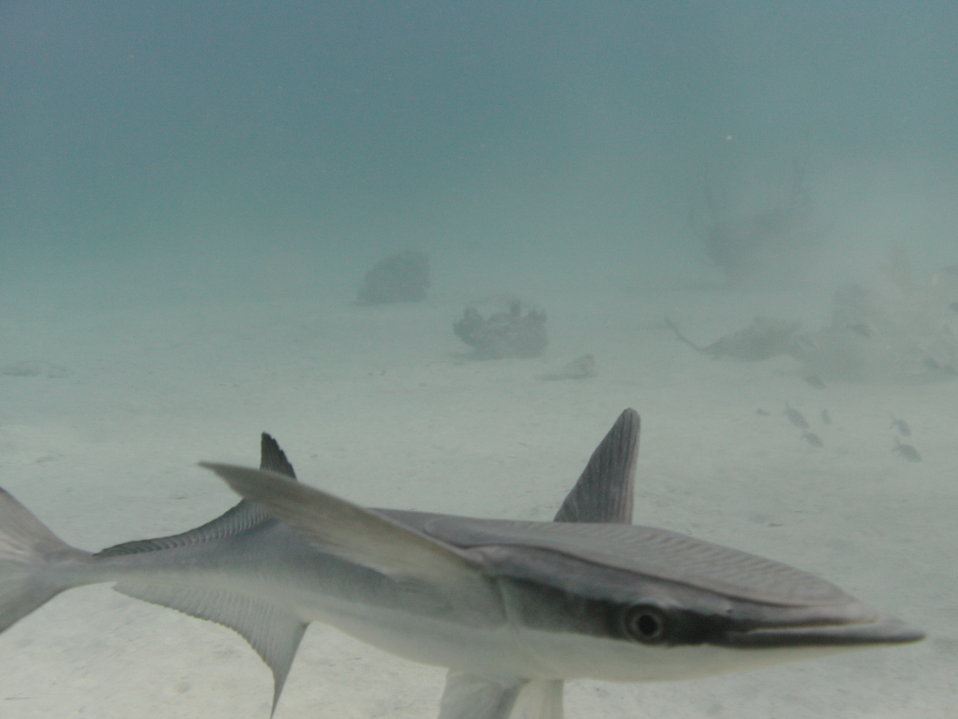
Curious Remora! Nassua, Bahamas

This Remora (Remora brachyptera) was photographed in about 30 feet of water at Barracuda Reef off of Nassua, Bahamas.

One member of EPA New England's dive team was in warmer than usual waters for 'proficiency dives.'

In order to maintain a safe dive program, EPA divers are encouraged to dive frequently, as the saying goes, 'practice makes perfect.'

When you are constantly diving in cold North Atlantic water, it is a treat and an opportunity to improve your skills to dive when traveling somewhere with warm water. Tropical diving is very different than in New England, where most work dives are in less than 40 feet of water.

Many tropical dives are much deeper and thus provide an opportunity for the diver to practice different skills. Plus, it's always wise to bring a camera just in case you see something interesting, or of course, if something interesting sees you!